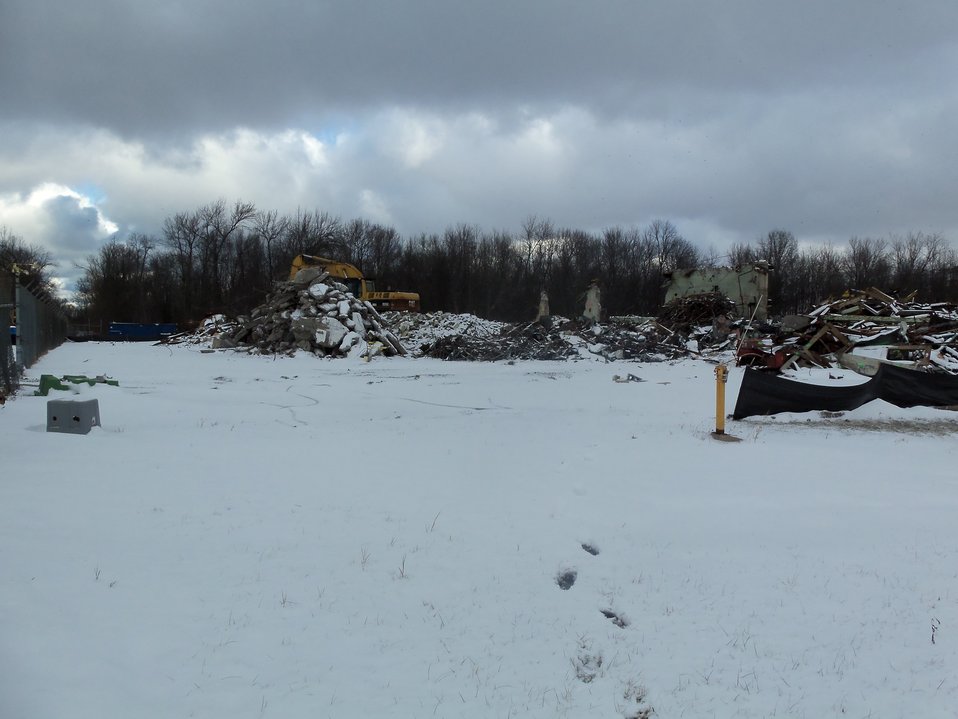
BLDG 401 DEBRIS REMAINS

Activities from the Niagara Falls Storage Site, which is associated with the former Lake Ontario Ordnance Works. Formerly Utilized Sites Remedial Action Program (FUSRAP), a program initiated in 1974 to identify, investigate and clean up or control sites that were part of the Nation's early atomic energy and weapons program. Activities at the sites that are eligible for FUSRAP were conducted by Manhattan Engineer District (MED) or the Atomic Energy Commission (AEC), both predecessors of the Department of Energy (DOE). The U.S. Army Corps of Engineers was assigned management of FUSRAP by Congress in 1997.